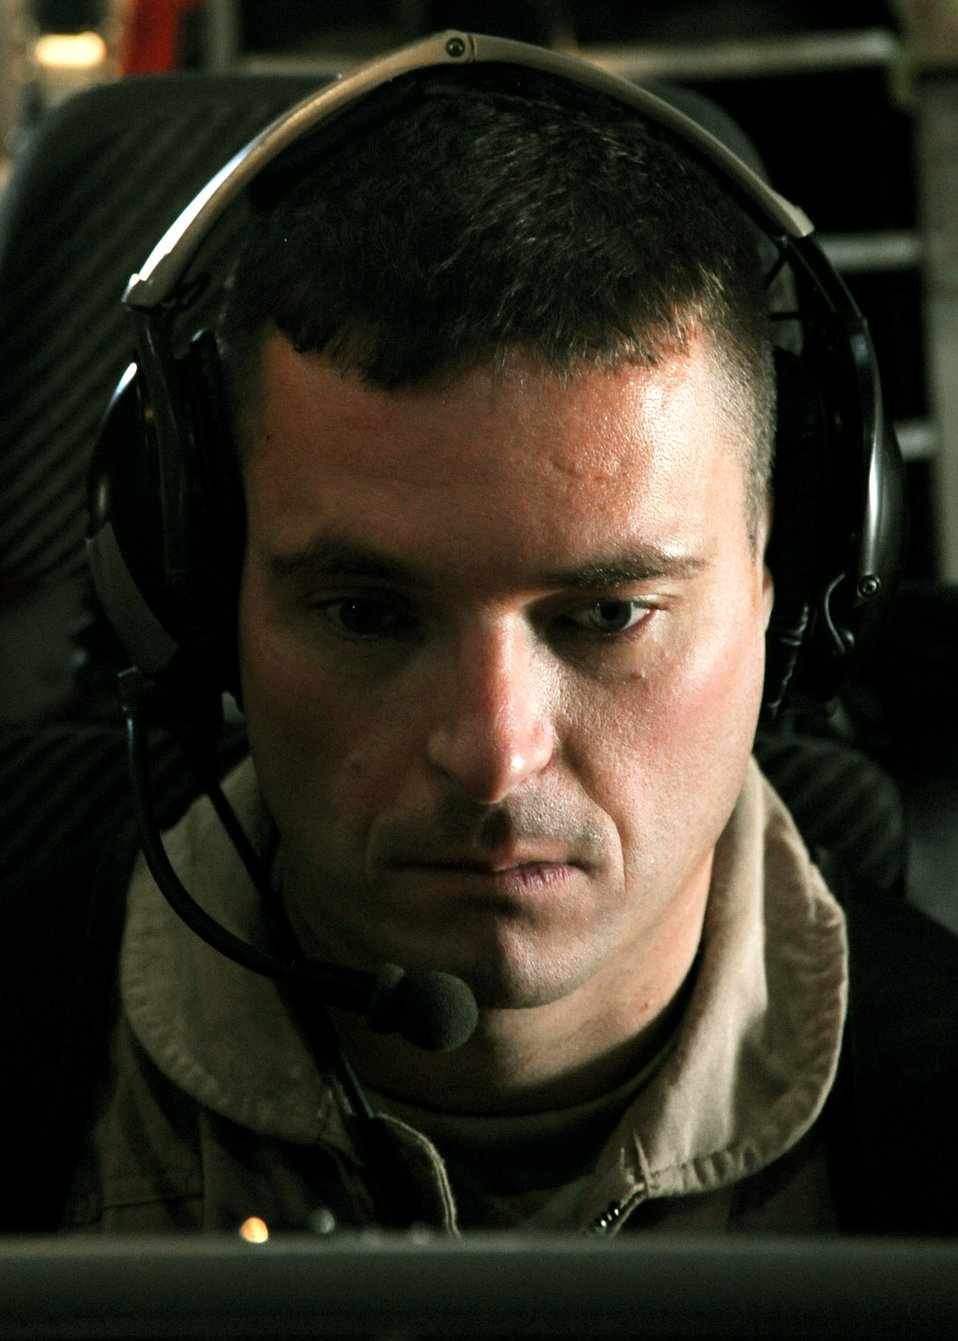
Air Force communication

Capt. Jason Davis prepares for a joint airborne battle staff detachment mission on a C-130 Hercules Nov. 24, 2009. The JABS is a joint operation focused on providing airborne communications support to ground forces. Captain Davis is the 777th Expeditionary Airlift Squadron mission commander.